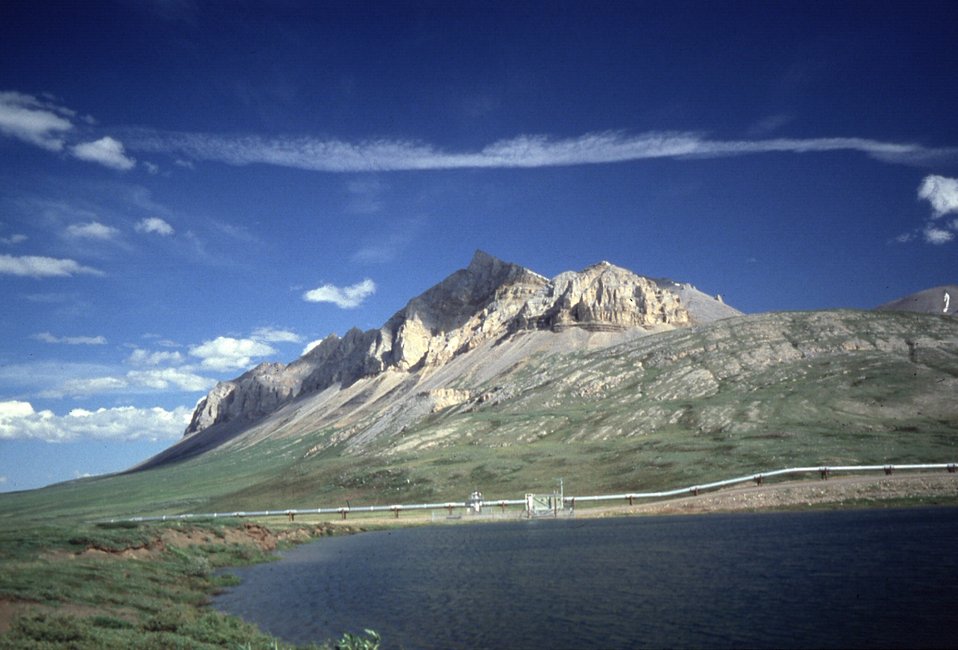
Trans-alaska Pipeline near Galbraith Lake, Dalton Highway